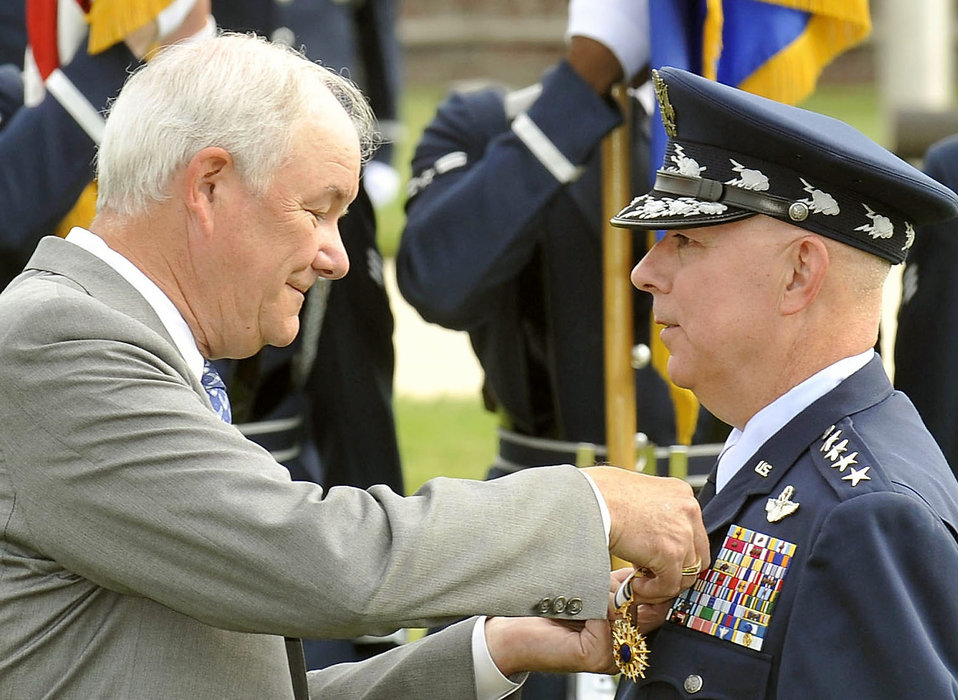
Service recognized

Former Secretary of the Air Force Michael Wynne pins the Distinguished Service Medal on Gen. T. Michael Moseley during the general's retirement ceremony July 11 on Bolling Air Force Base. General Moseley was the 18th Air Force chief of staff.